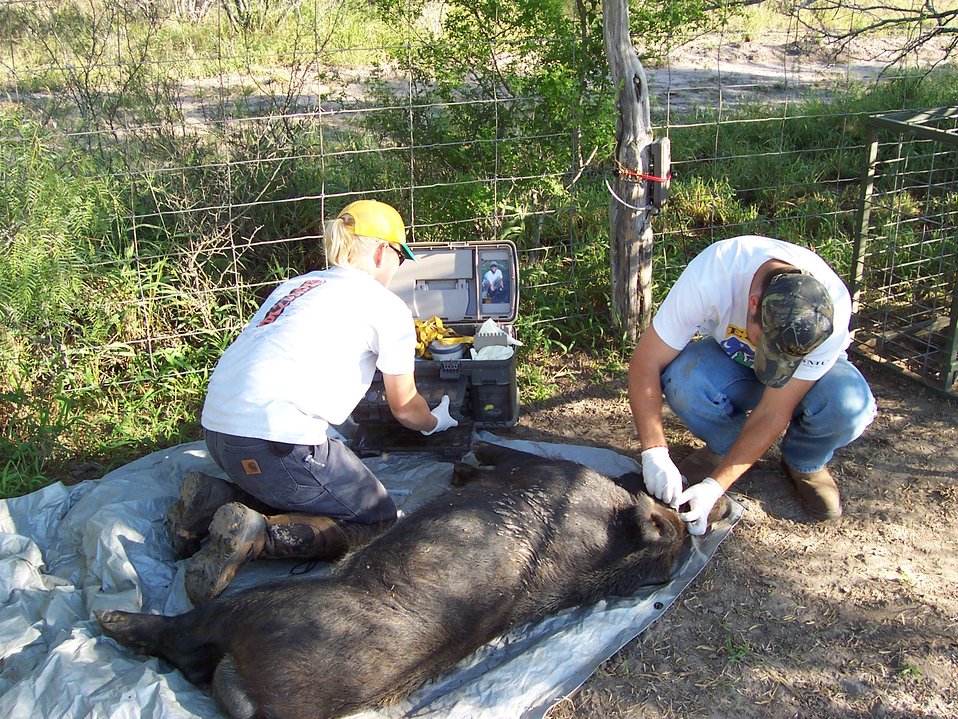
The U.S. Department of Agriculture's (USDA) Animal Plant Health and Inspection Service (APHIS) Wildlife Services (WS) researchers focus on a variety of topics such as feral swine behavior and ecology, disease transmission, and the development of new management tools and techniques. Recent efforts are investigating an oral toxicant bait and swine-specific bait delivery systems.